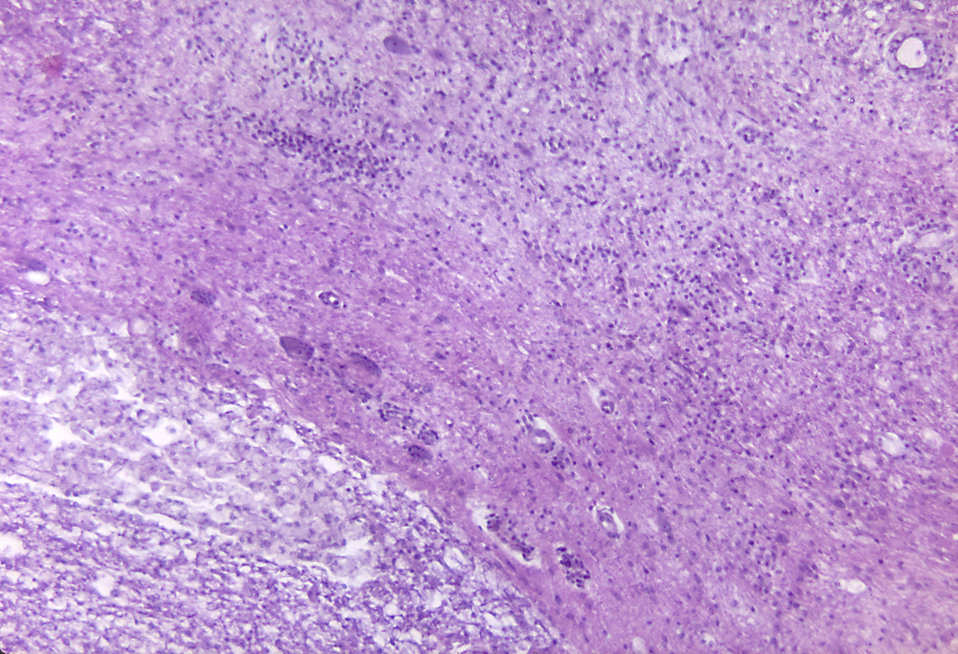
A photomicrograph of the thoracic spinal cord depicting degenerative changes due to an infarct caused by Polio Type III.